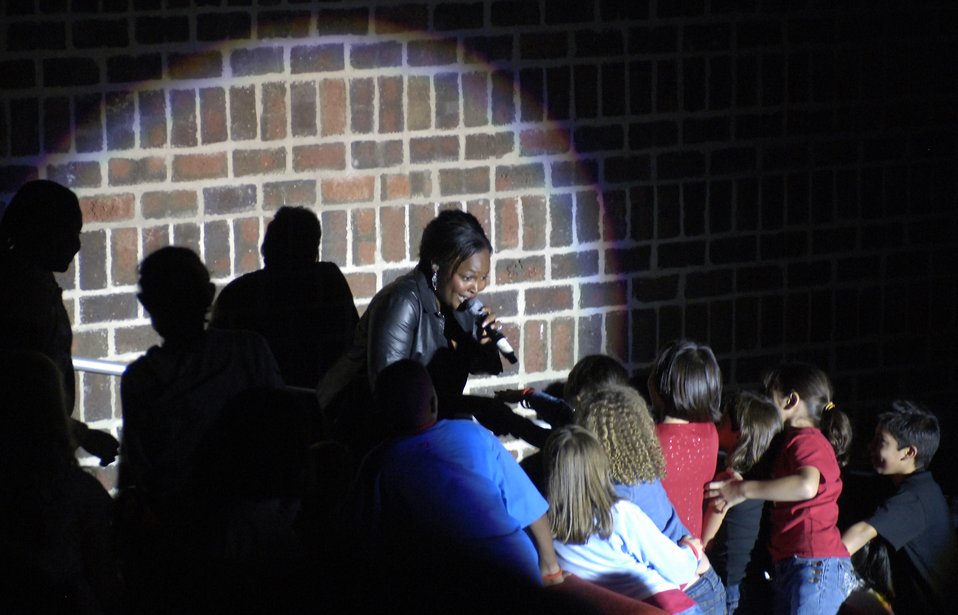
Sergeant takes Anti-drug battle personally

Staff Sgt. Keisha Gwin-Goodin, a vocalist with Reserve Generation, sings to third through seventh grade students attending an anti-drug concert Oct. 25 at Trinity University in San Antonio. The concert was part of National Red Ribbon Week, an anti-drug campaign focused on educating individuals, families and communities on the destructive effects of drugs and the positive alternative life choices that are available to youth. The 2006 Red Ribbon Week runs from Oct. 23 to 29. Reserve Generation is part of the Air Force Reserve Command Band at Robins Air Force Base, Ga.